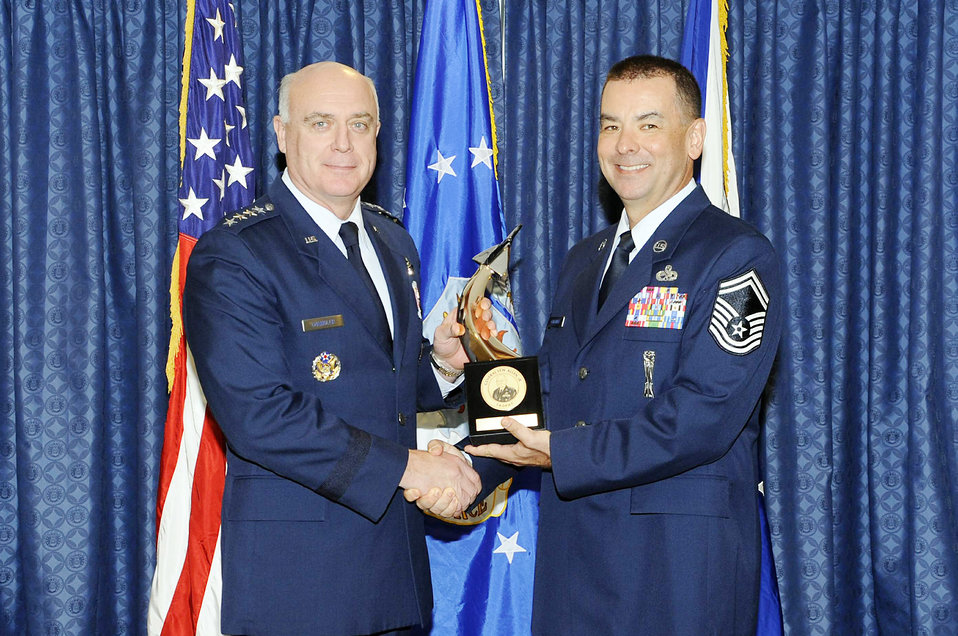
Airmen earn Gen. Lew Allen Award

Gen. Carrol H.